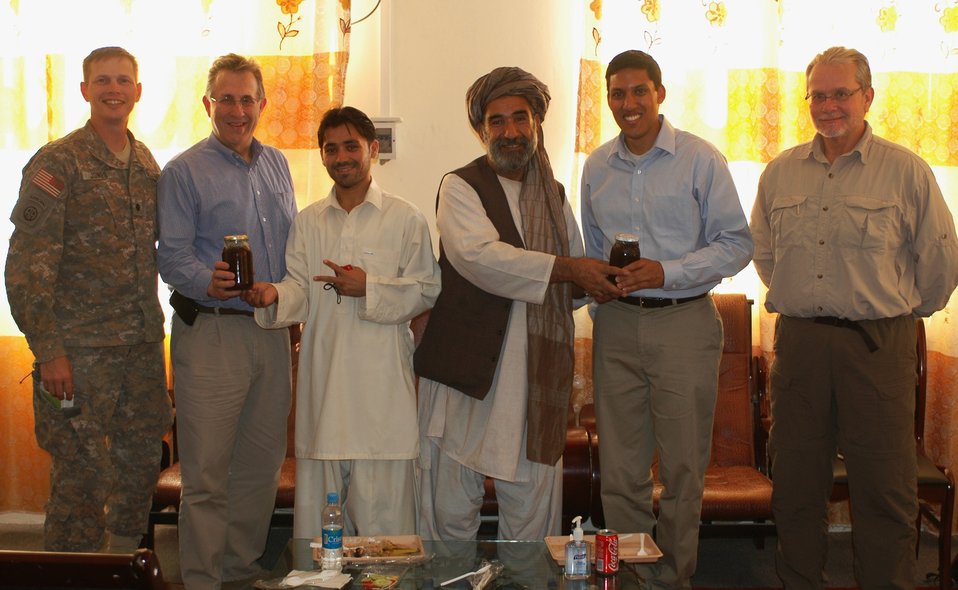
Dr Shah Visits Argandab April 10, 2010